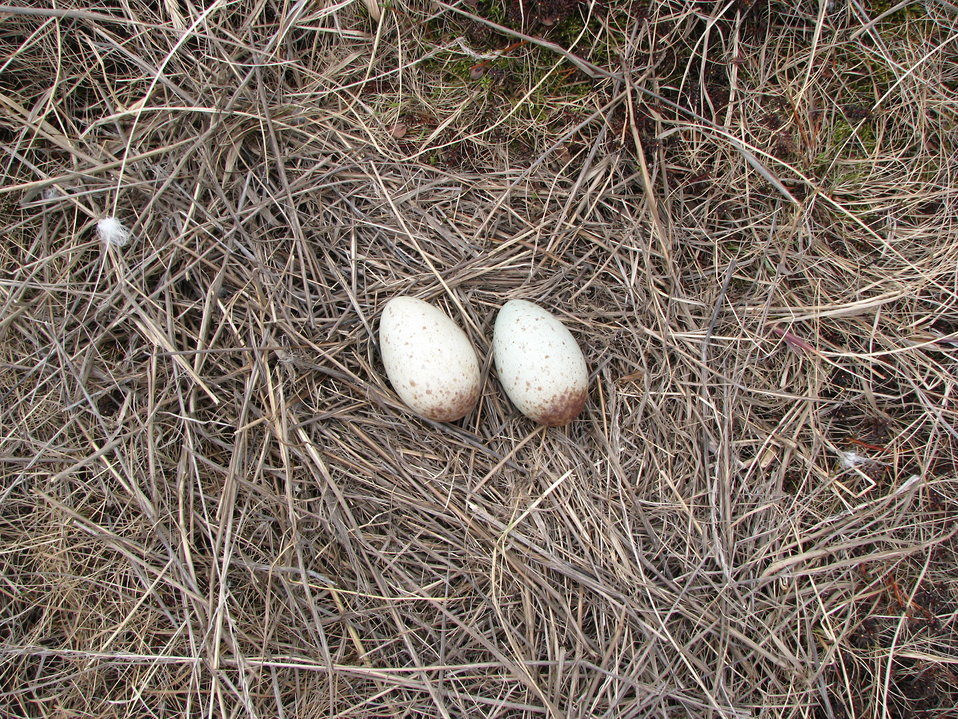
Crane nest with eggs

Yukon Delta NWR